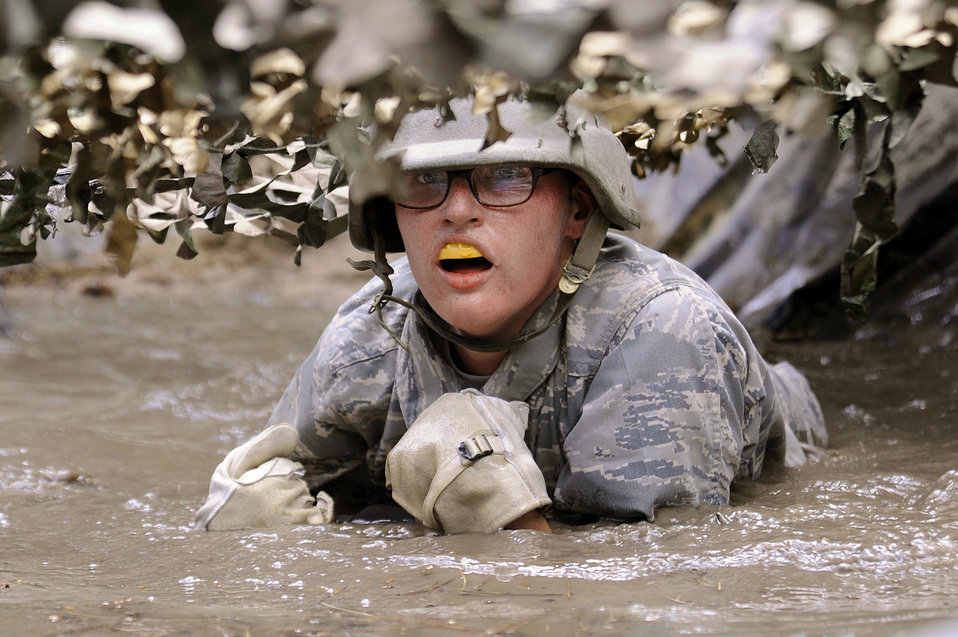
The end of this has to be near!

U.S. Air Force Academy Basic Cadet Elizabeth Hicks navigates the assault course in Jacks Valley, Colo., July 12, 2010. Basic cadets spend about two weeks in Jacks Valley learning how to work as a team to conduct military operations.